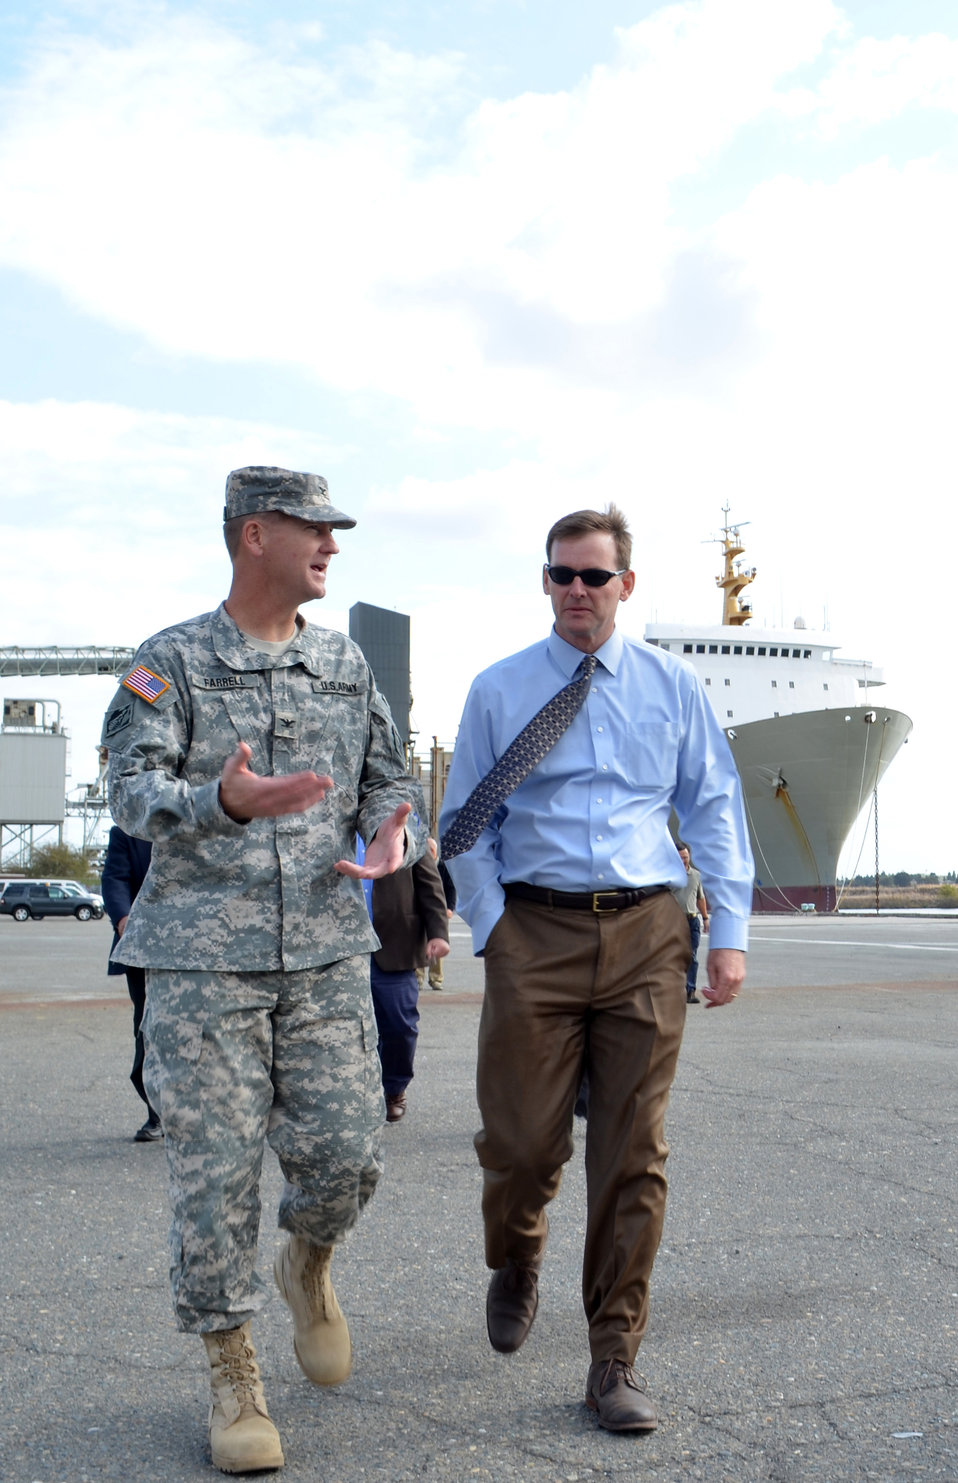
Col. Farrell tours West Sacramento projects

Col. Michael Farrell, commander for the U.S. Army Corps of Engineers Sacramento District, discusses Port of Sacramento operations with Rick Toft, port business manager for the City of West Sacramento, during a tour Oct. 29, 2013. The Sacramento District conducts annual maintenance dredging along the deep water ship channel to allow ships to safely navigate the route to the port. Image cropped for emphasis.